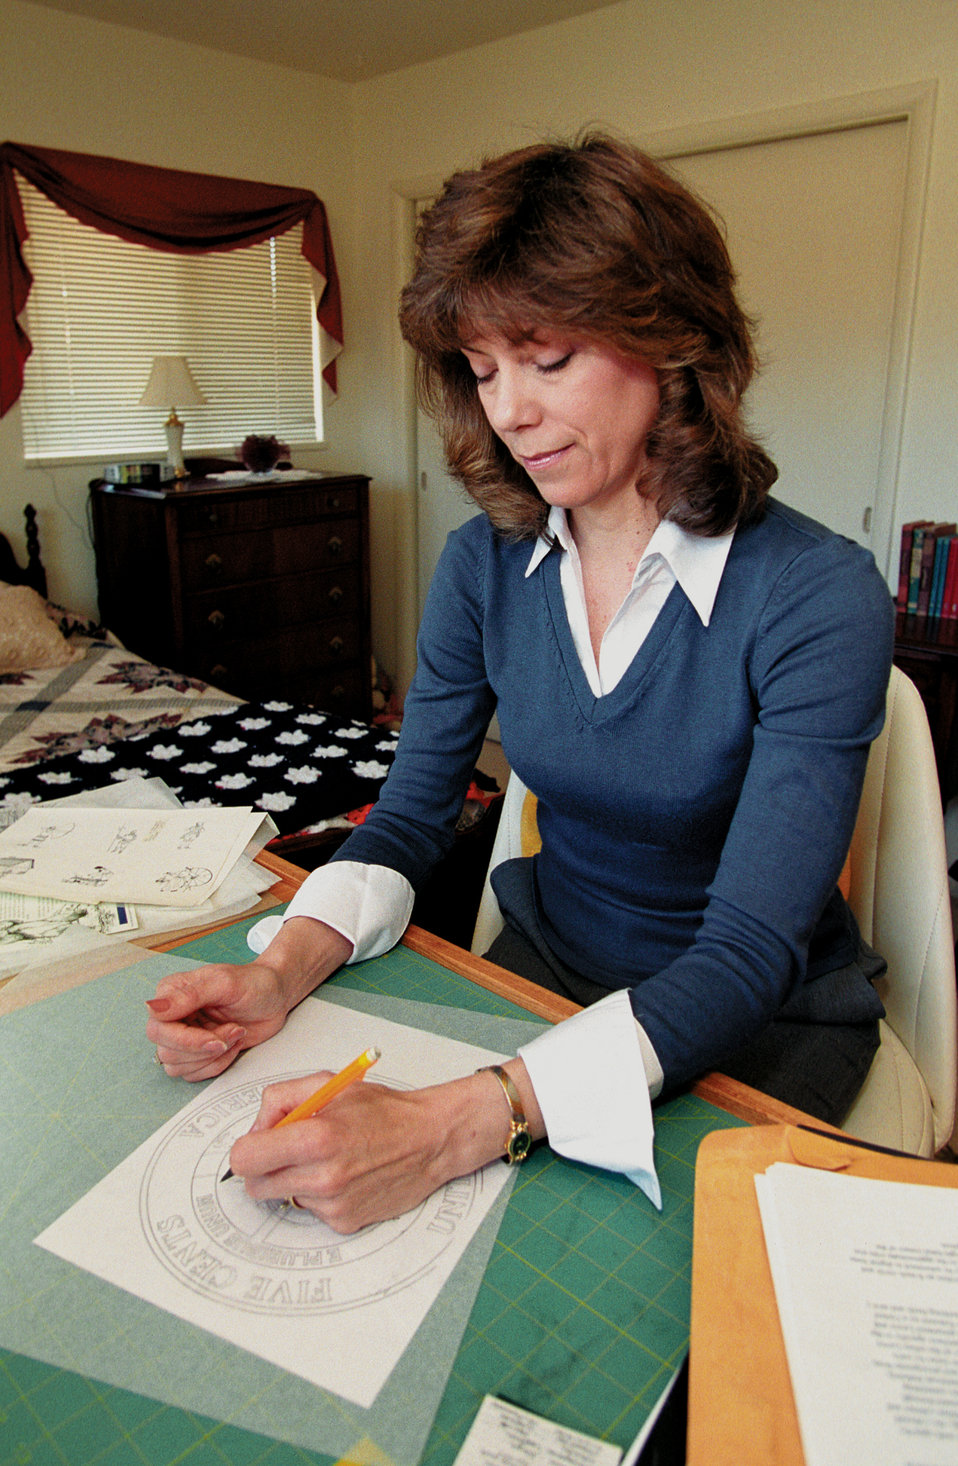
The New Nickel

TINKER AIR FORCE BASE, Okla. -- Susan Gamble is one of 24 artists selected to submit designs for a new nickel, the first change to the coin in 66 years. Mrs. Gamble works at a drafting table at home here after doing initial design work on her computer. She is the wife of Col. Michael Gamble, the 72nd Air Base Wing Mission Support Group commander here.